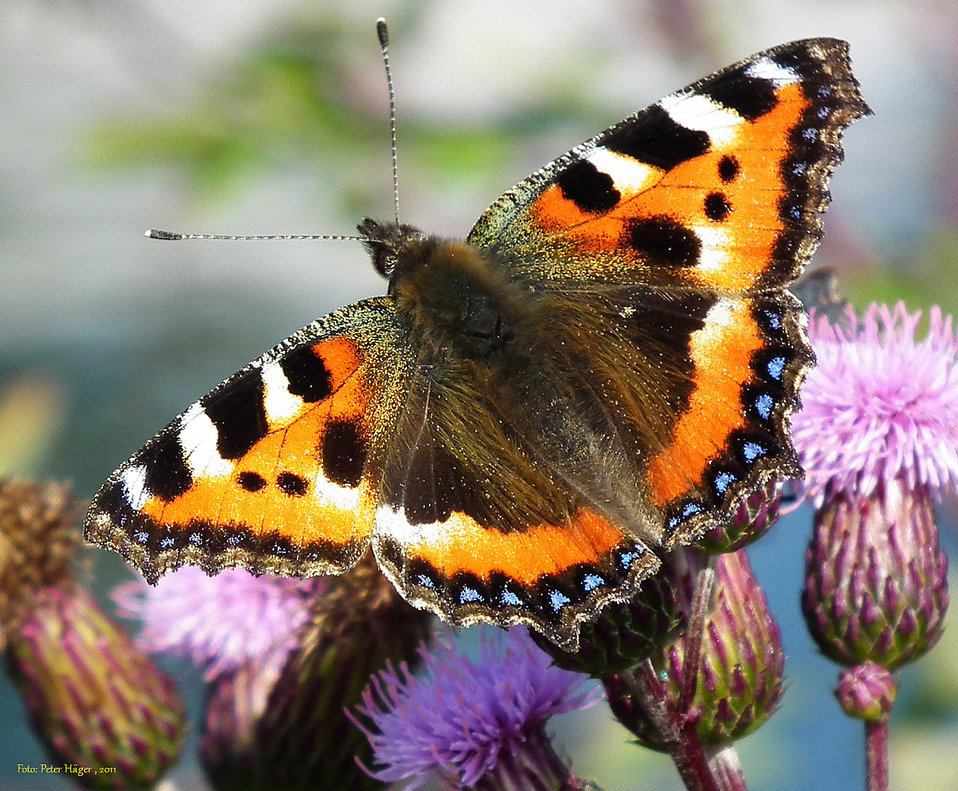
Small tortoiseshell

Nymphalis urticae.